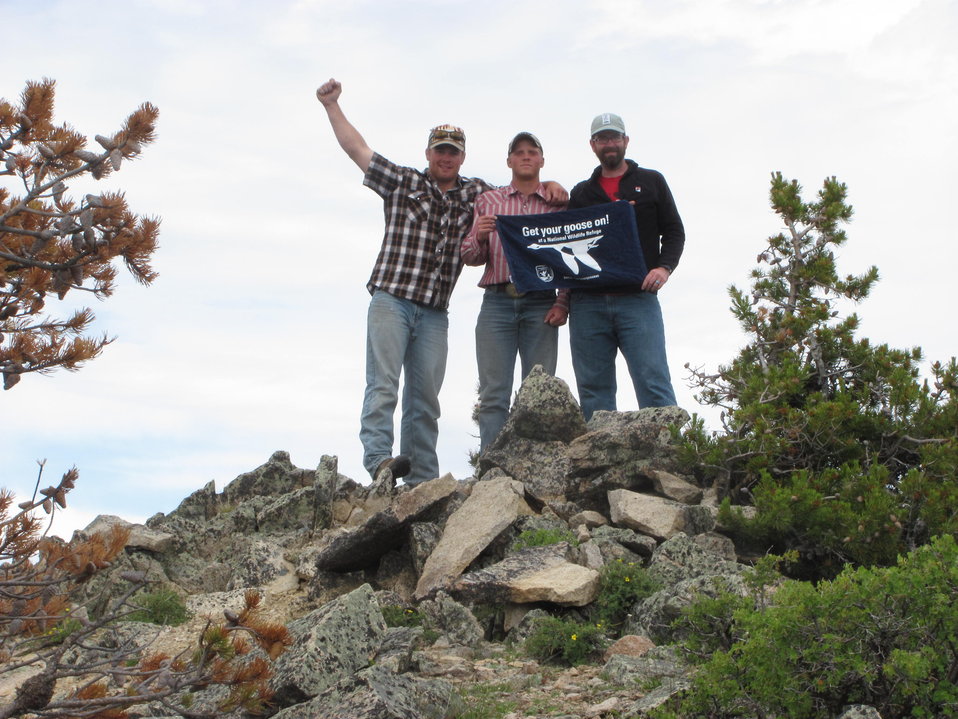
Get Your Goose On!

The Benton Lake National Wildlife Refuge traveling strike team Gets Their Goose On!